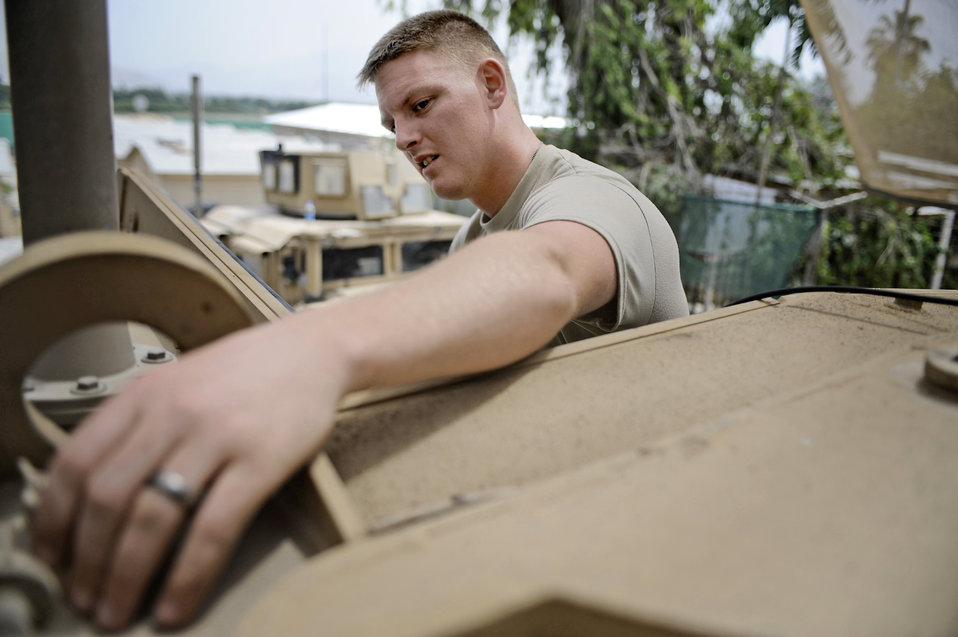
Tactical Comm Airmen keep military ops online, on target

Staff Sgt. Andrew Palmer, Nangarhar Provincial Reconstruction Team telephone maintenance specialist, performs routine maintenance on a mine-resistant, ambush-protected vehicle May 30 at Forward Operating Base Fenley-Shields, Afghanistan. The PRT is responsible for development and reconstruction projects in Nangarhar Province. The projects are built by local contractors and are designed to improve the livelihood of the people living in the area.